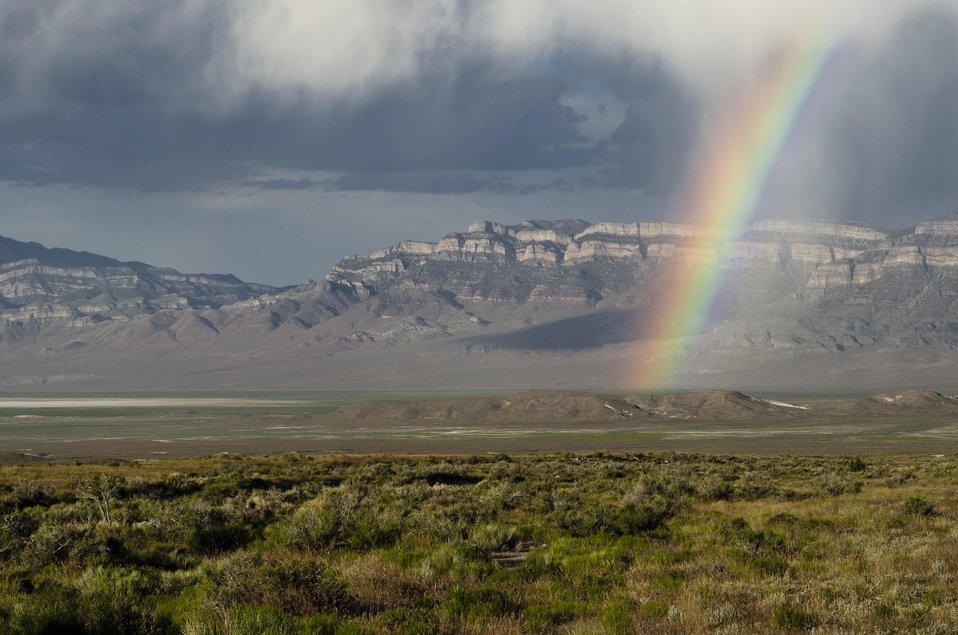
16th Place - After a Spring Storm in the Great Basin

The Great Basin is the largest terminal basin in the U.S. Located in UT, NV, ID, and OR, along the Western edge of the Mountain-Prairie Region. It is a landscape that is defined by its feeling of space and openness.

Credit: Larry Crist / USFWS

Photo Contest Entry #53